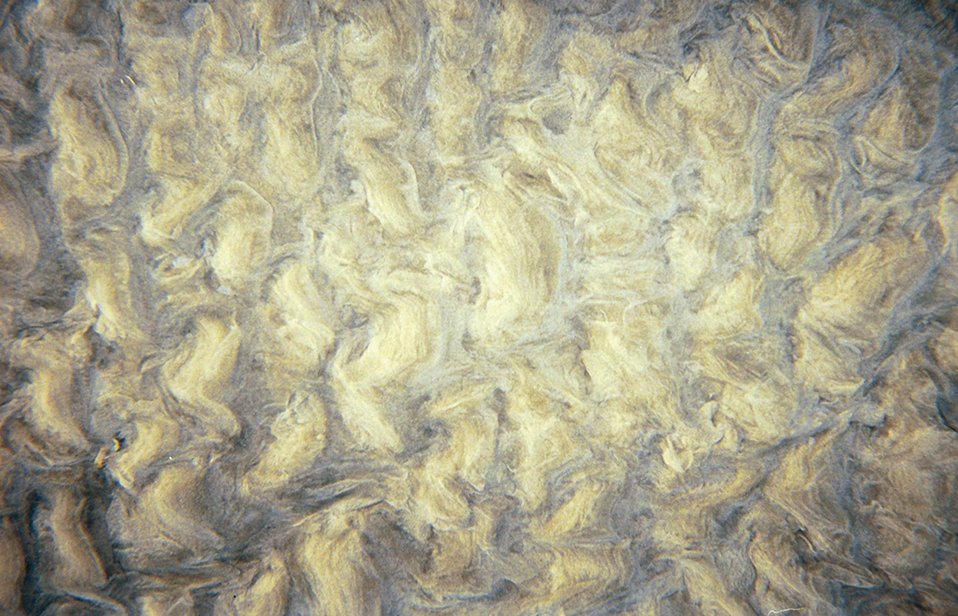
A beautiful ripple pattern in the tidal zone.